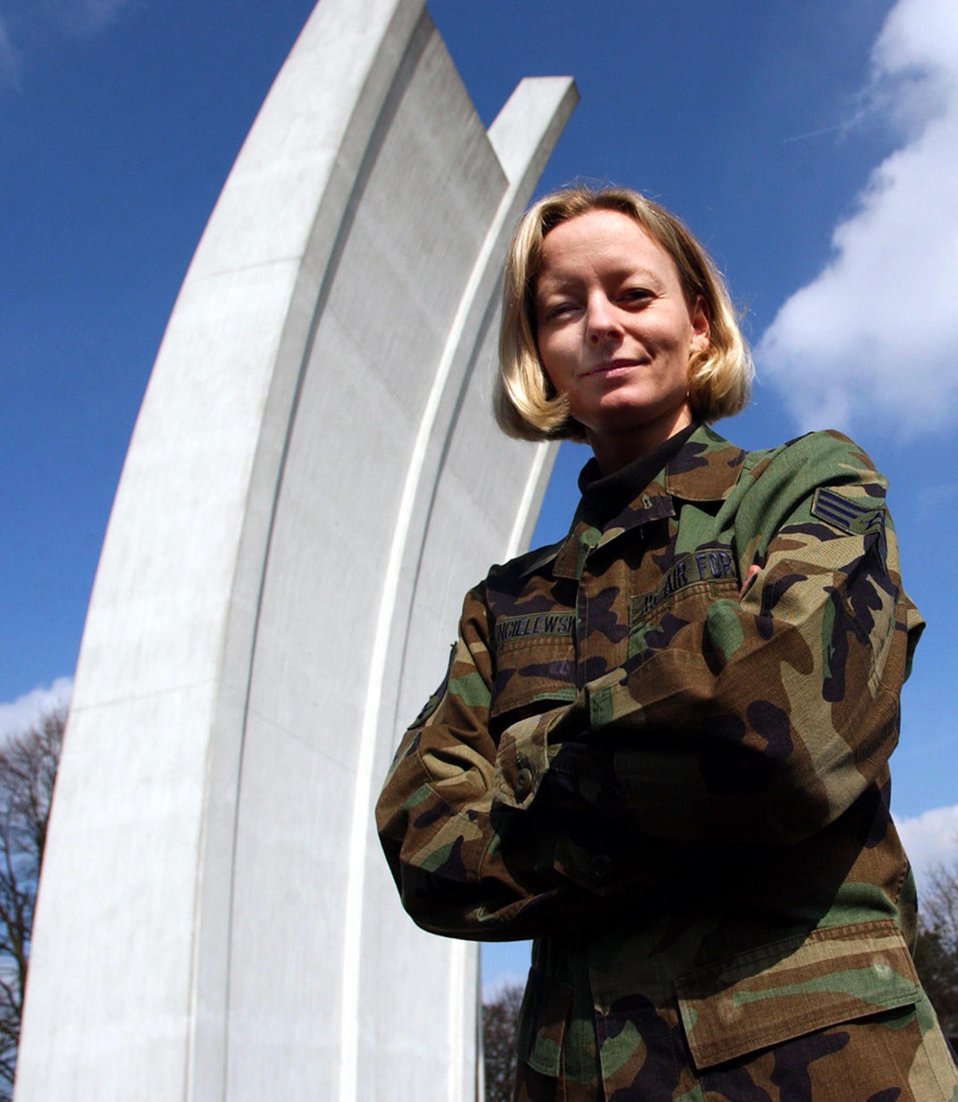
Dzincielewski

RHEIN-MAIN AIR BASE, Germany -- Senior Airman Anke Dzincielewski pauses near the Berlin Airlift Memorial here. Dzincielewski grew up in East Germany and remembers life before the Berlin Wall came down. She is deployed here from Ellsworth Air Force Base, S.D.